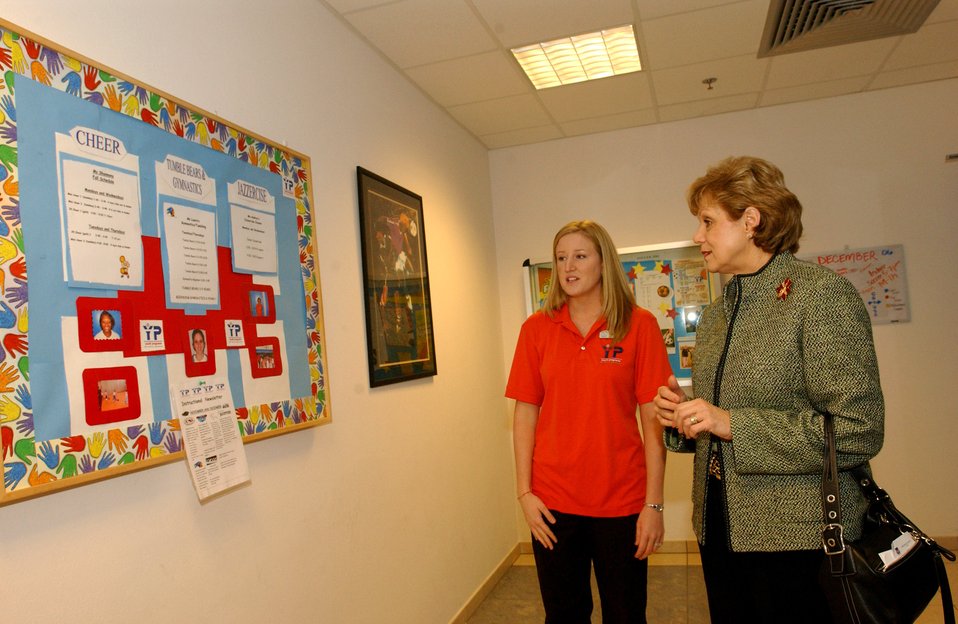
Caring for Airmen and their families

Shalee Torrence shows the different activities and programs offered to school aged children to Barbara Wynne Dec. 5 at Aviano Air Base, Italy. Secretary of the Air Force Michael W. Wynne and his wife are visiting with Airmen to get an orientation of the 31st Fighter Wing. Secretary Wynne is responsible for the affairs of the Department of the Air Force, and ensures the Air Force can meet its current and future operational requirements. Ms. Torrence is the base youth program manager.